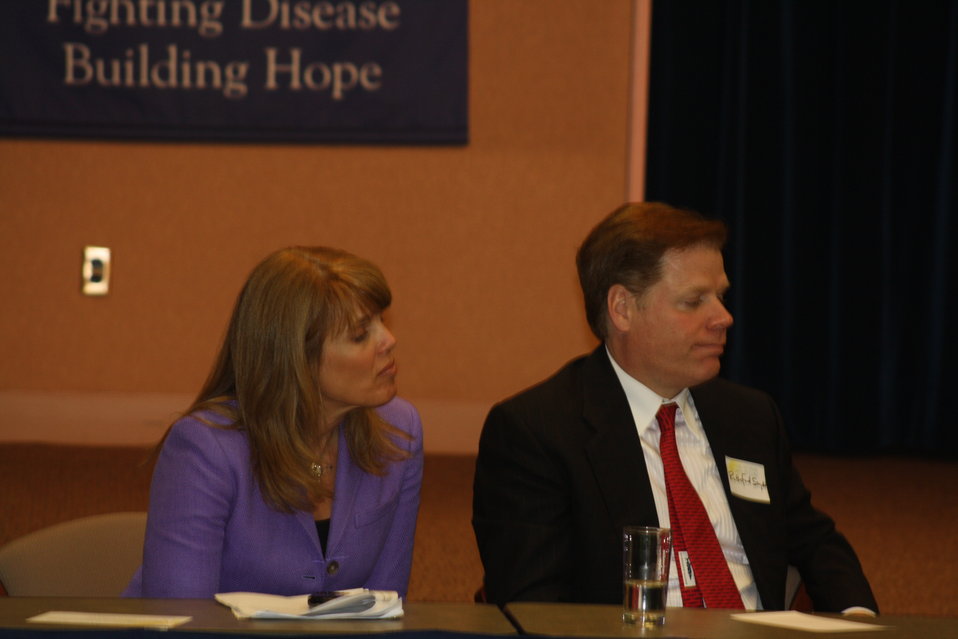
Faith-Based and Neighborhood Partnership launch at Atlanta's Carter Center